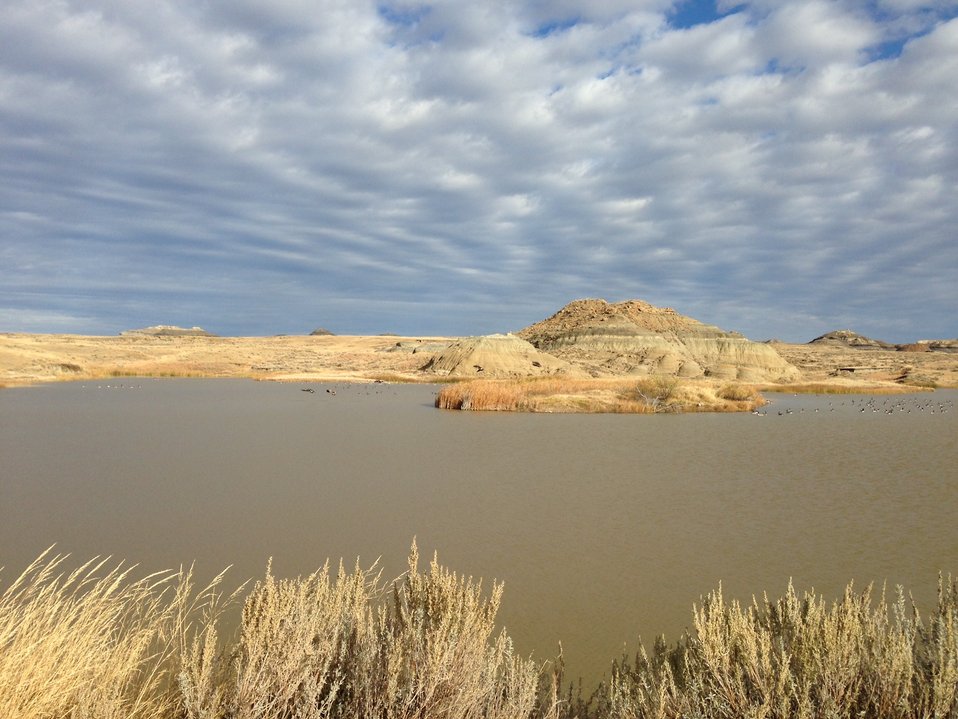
Dry Arm Geese

A view of the Dry Arm on Charles M. Russell NWR on a fall day.